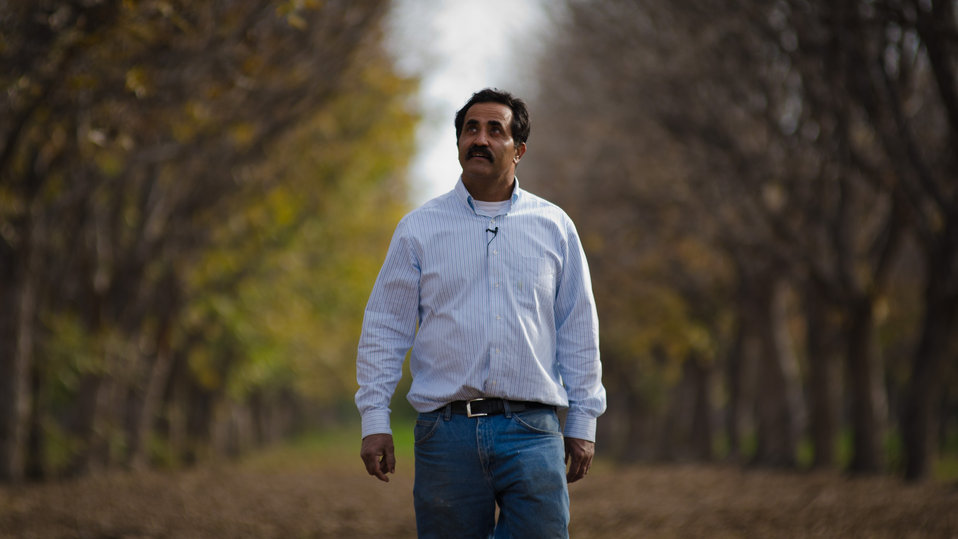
Arrowhead Farms of Crystal City, TX, on December 9, 2011, survived the exceptional drought and owner Mr. Akram Mohammad, can walk through the rows of 4,380 underground micro irrigated pecan trees on 146 of his 719 acre farm. Under his feet are nearly 25,000 feet of drip tubes, cutting in half the demand for water. During the growing season, the micro irrigated orchards are nearly a one-person operation. Mr. Mohammad said, “USDA (U.S. Department of Agriculture) was essential to my business and trees surviving the recent exceptional drought. The trees were stress free thanks to underground micro-irrigation. This is essential to the future growth of Texas agriculture and good for America.” U.S. Department of Agriculture’s (USDA) Environmental Quality Initiative Program (EQIP) awarded Mr. Mohammad a $130,000 grant in 2008. He provided $26,000 for the balance of the $156,000 total cost to install a 146-acre underground micro-irrigation for 4,380 trees.